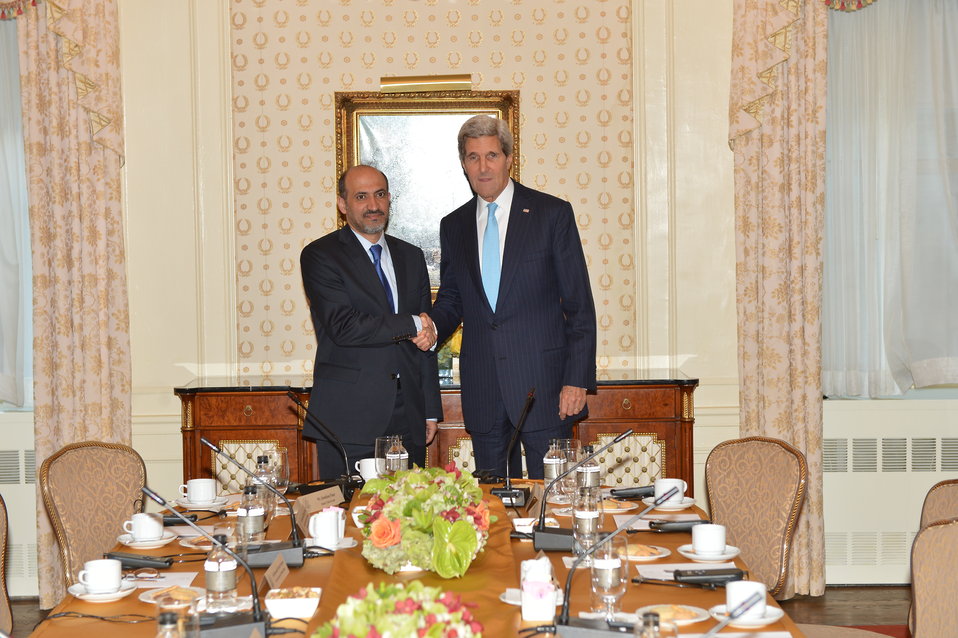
Secretary Kerry Meets With Syrian Opposition Coalition Chairman Ahmed Assi al-Jarba

U.S. Secretary of State John Kerry meets with Syrian Opposition Coalition Chairman Ahmed Assi al-Jarba in New York City on September 24, 2013.